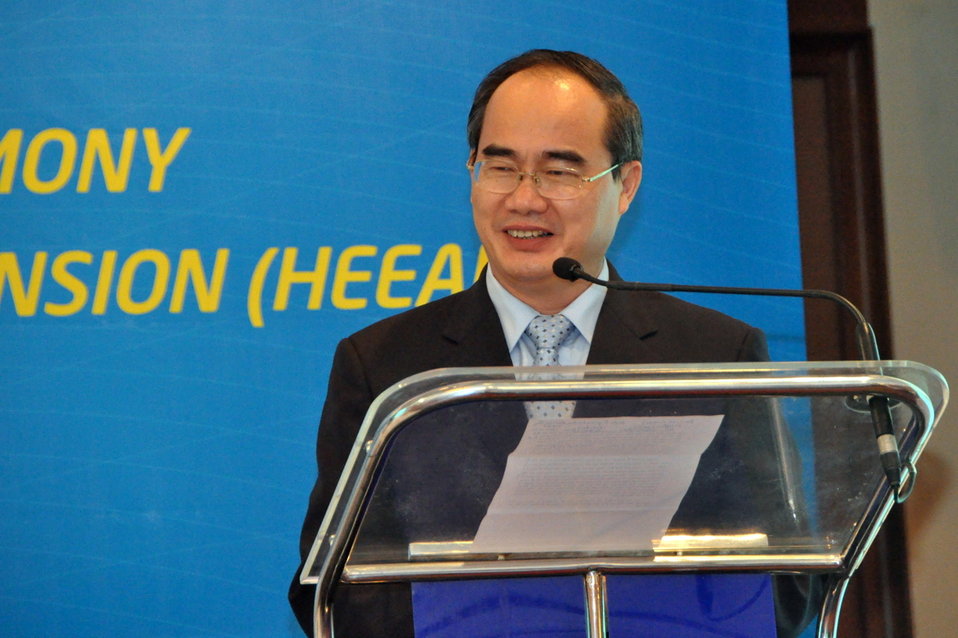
Vietnam's Deputy Prime Minister Nguyen Thien Nhan Addresses the Higher Engineering Education Alliance Program Expansion Launch

Hanoi, August 20, 2012.